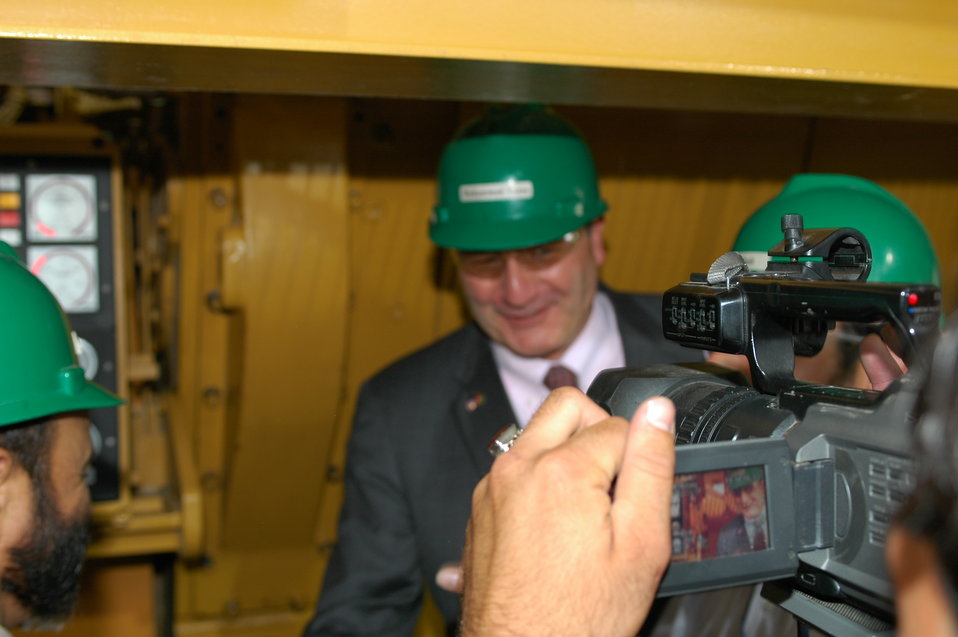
105 MW Tarakhil Power Plant Handover